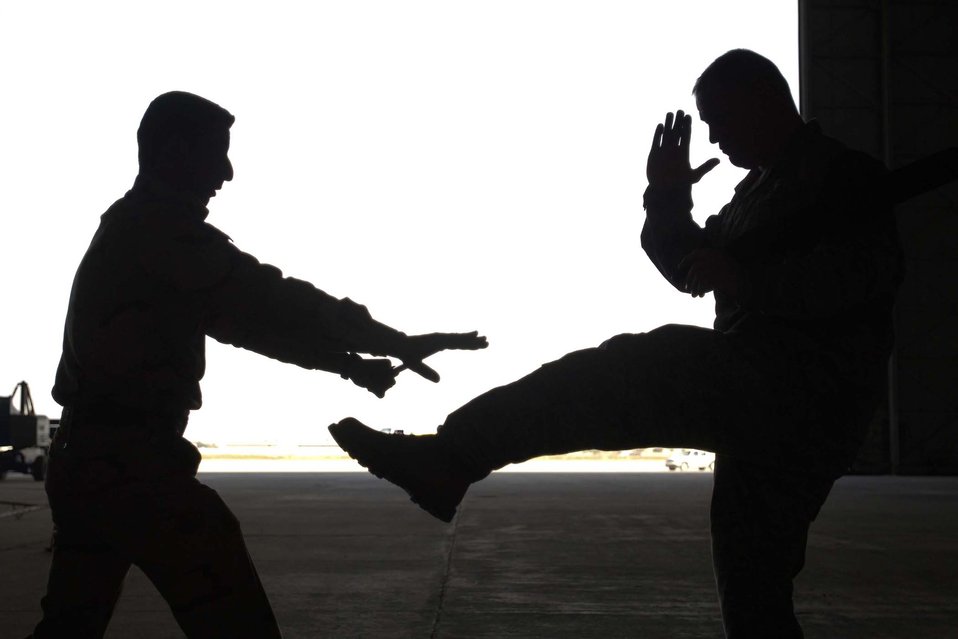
Martial arts master

A member of the Iraqi air force (left) defends himself against Staff Sgt. Timothy DeTerra, New Al-Muthana Air Base transition team member, during a training session Dec. 23, 2010. This training is the first of its kind at the base, and promises to help the Iraqi air force build a reliable and secure force in the year ahead.